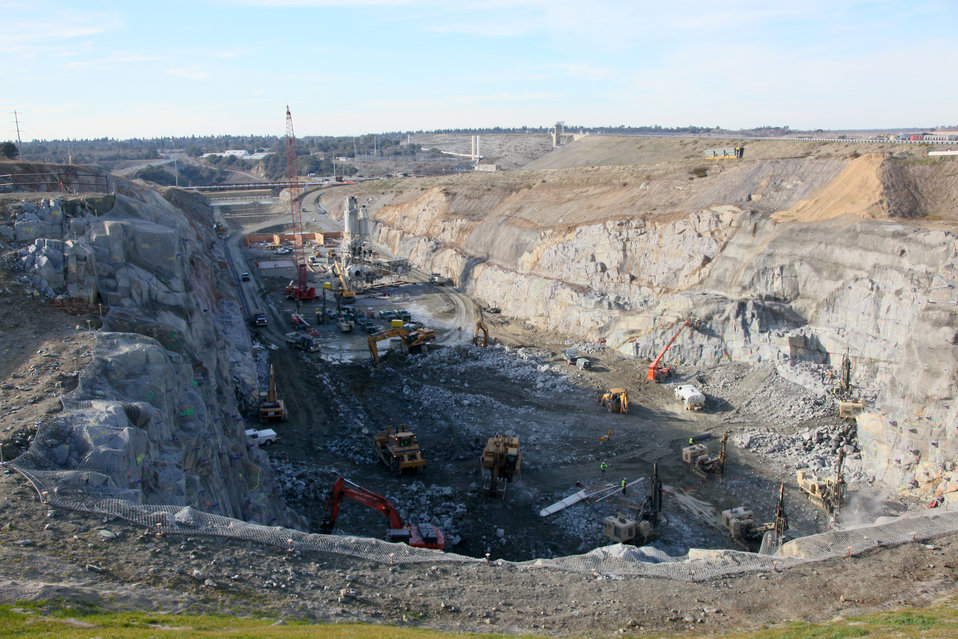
Concrete mixing equipment moves into the Folsom Dam auxiliary spillway

Workers complete the first stage of installing concrete mixing equipment for the new Folsom Dam auxiliary spillway in Folsom, Calif., Jan. 25, 2012. Paving is scheduled to begin in May, said U.S. Army Corps of Engineers Sacramento District project engineer Larry Smith. The spillway will allow Folsom Dam to release water sooner and more safely. The project is part of the Folsom Dam Joint Federal Project, a joint effort of the U.S. Army Corps of Engineers Sacramento District, the U.S. Bureau of Reclamation, the Central Valley Flood Protection Board and the Sacramento Area Flood Control Agency to improve the safety of the dam and reduce flood risk for the greater Sacramento area.